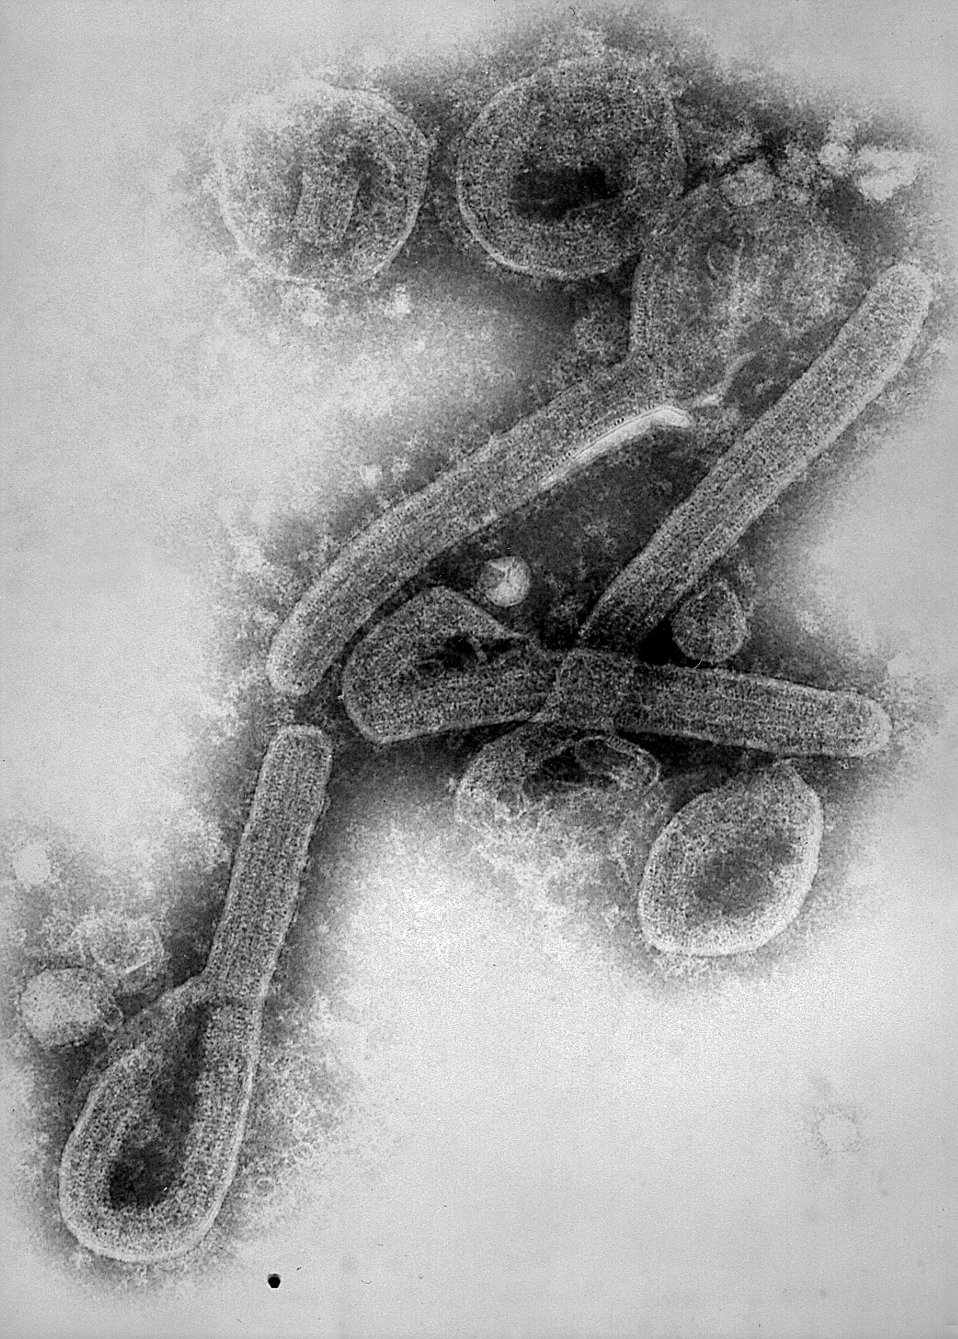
Electron micrograph of the Marburg virus.